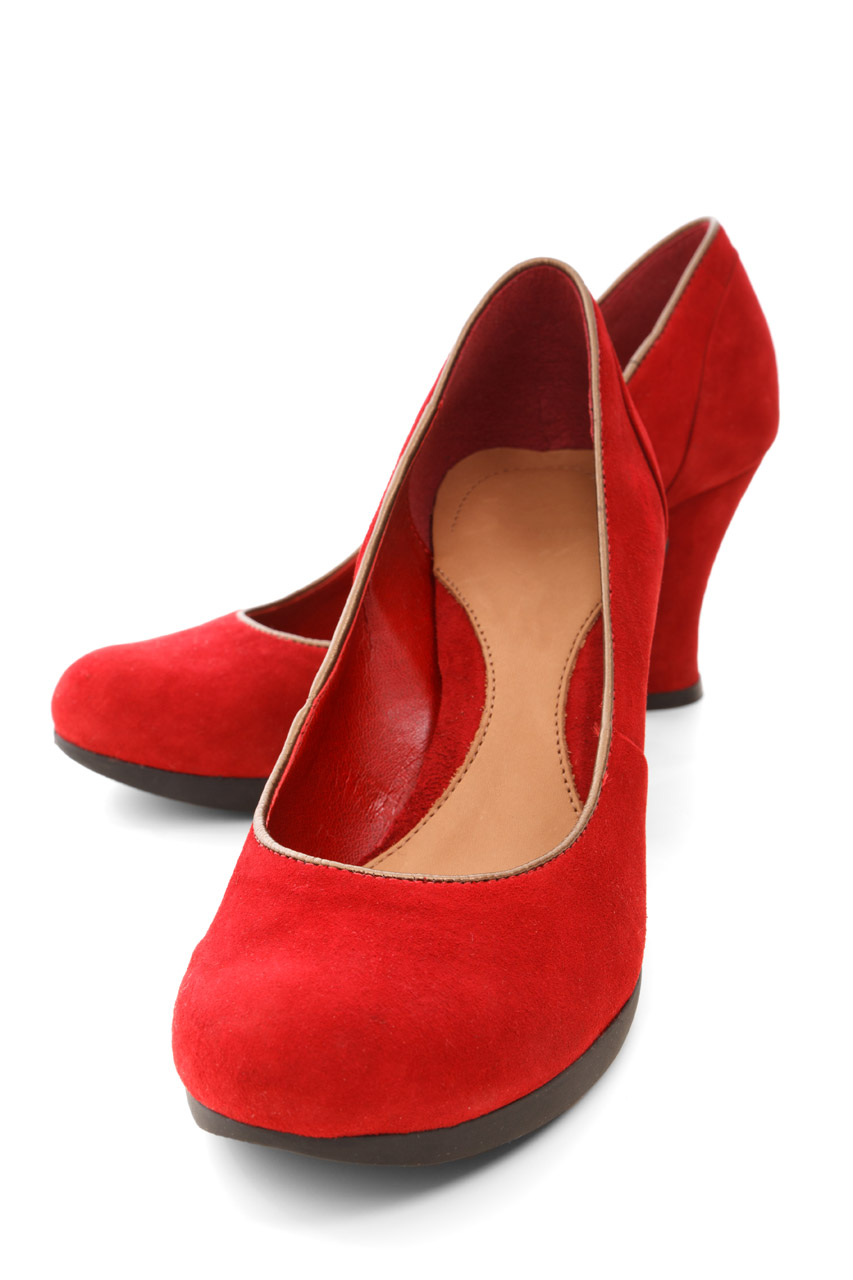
Red shoes isolated

Red high heels isolated on white background.